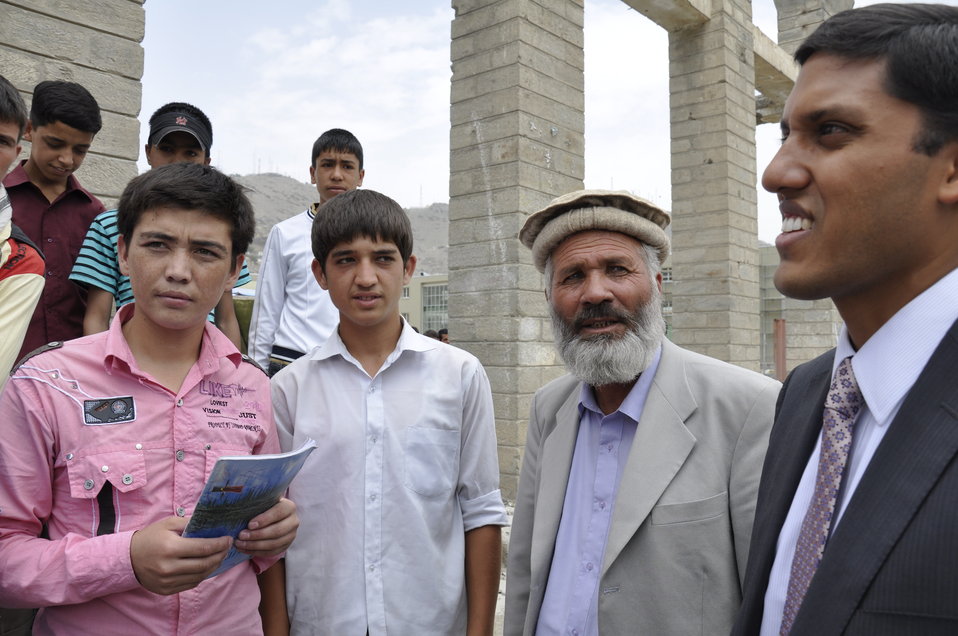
Ghazni High School in Kabul